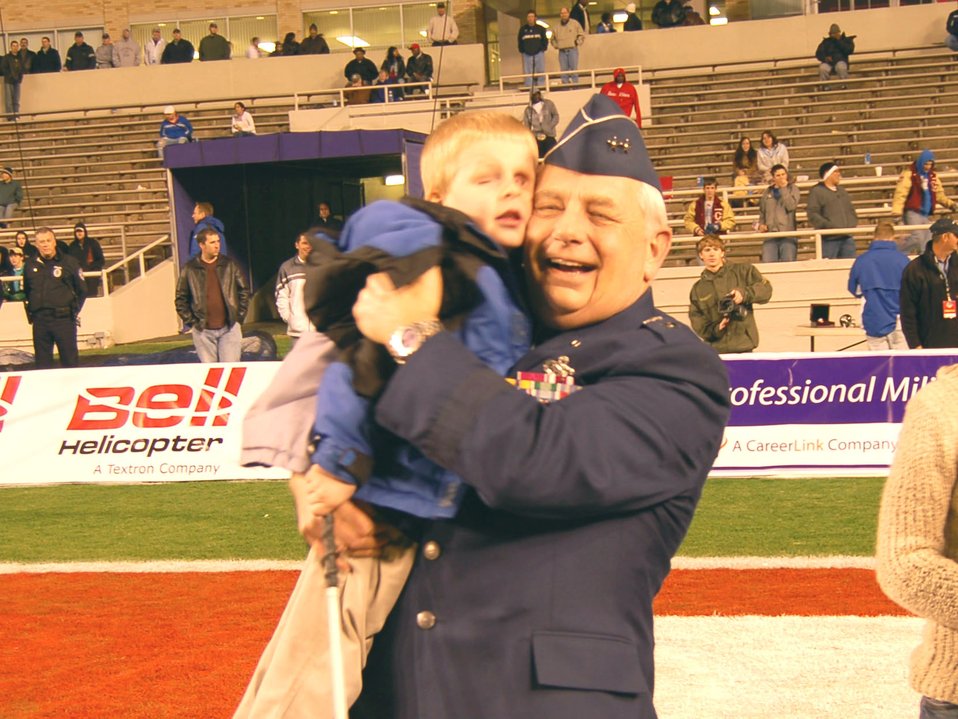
Bell Helicopter Armed Forces Bowl pays tribute to servicemembers

Maj. Gen. Allen R. Dehnert, assistant adjutant general and commander, Texas Air National Guard, hugs 5-year-old Sawyer Deevers, a boy with vision impairment from Iowa. Sawyer has been a big contributor to Connect and Join, and has sent messages of support written in Braille to servicemembers deployed overseas. Sawyer's pages were part of several scrapbooks presented to the general to send to the troops overseas. The presentation was part of the Bell Helicopter Armed Forces Bowl in Fort Worth, Texas, Dec. 23.